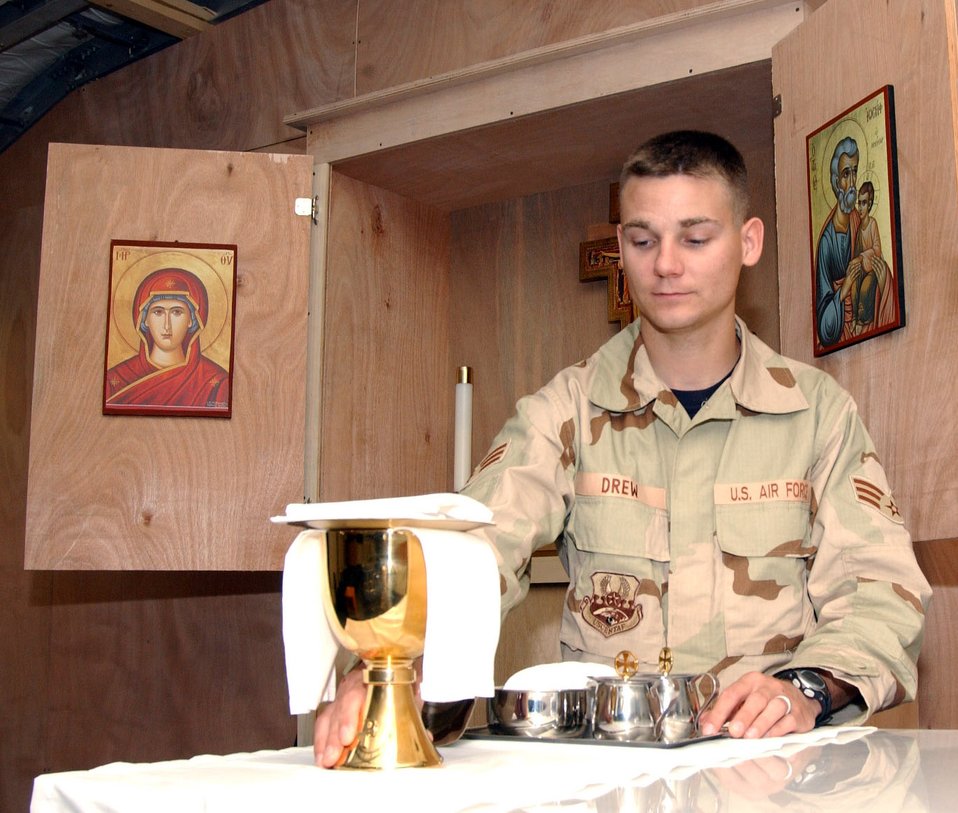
At your service

BALAD AIR BASE, Iraq -- Senior Airman Steven Drew, a chaplain assistant, prepares for a service at the chapel here. The assistants prepare the chapel for services, are liaisons for the chaplains and provide force protection for them. Airman Drew is assigned to the 332nd Air Expeditionary Wing, and he is deployed from Peterson Air Force Base, Colo.